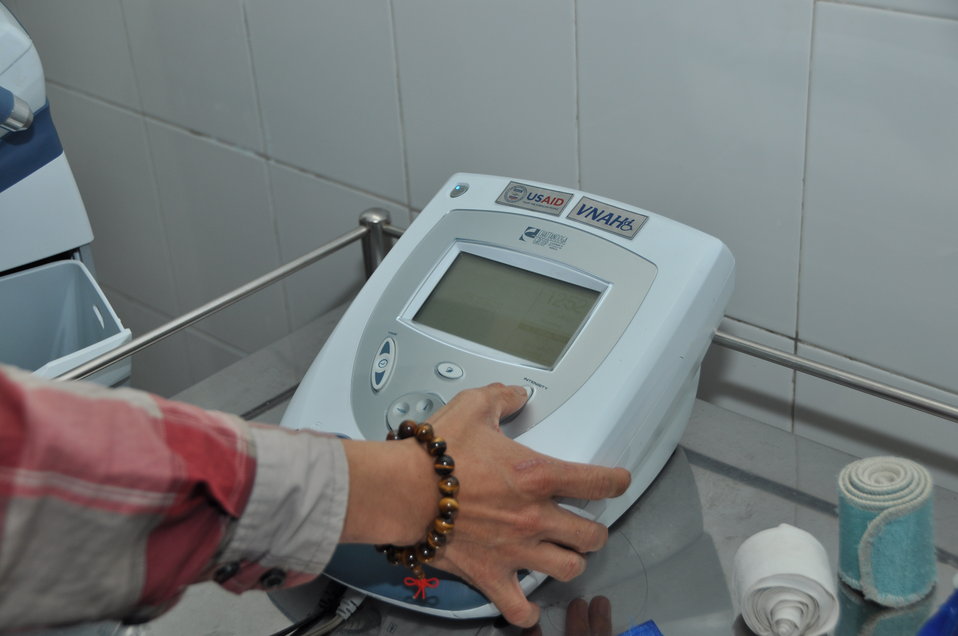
USAID support to Thanh Khe District Hospital

USAID-supported equipment and training help the staff at Thanh Khe District Hospital to meet the physical therapy needs of the disabled population of Danang.